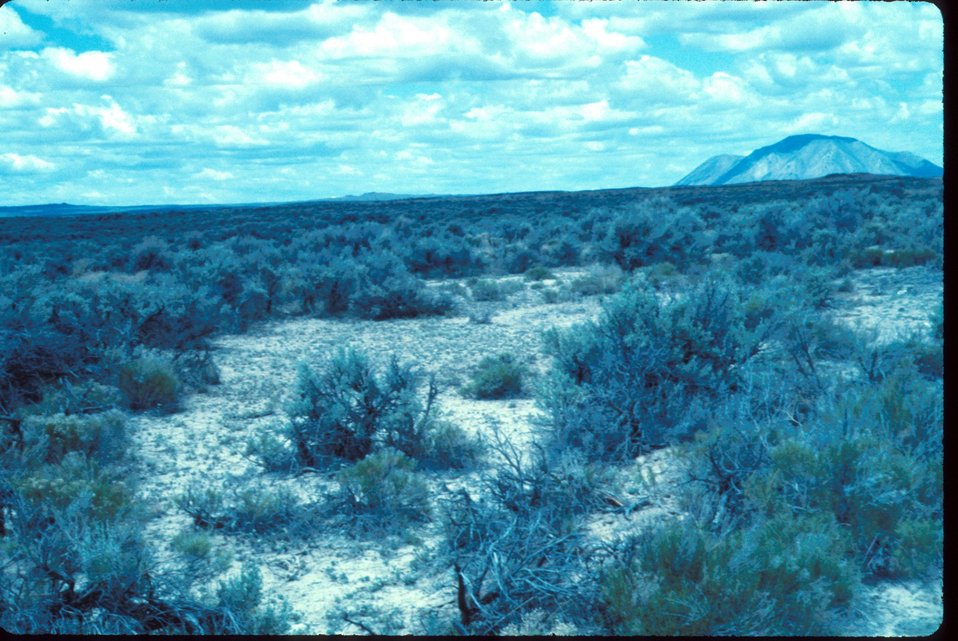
Habitat of Gilia leptomeria Wildflower